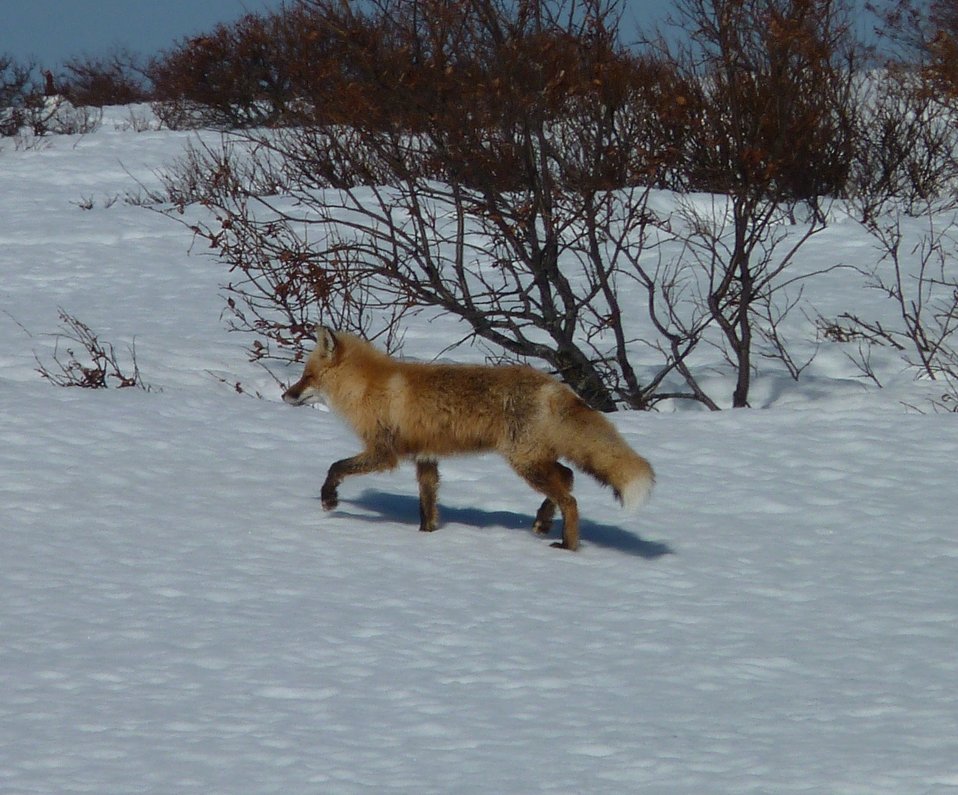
Red fox

Andreafsky Wilderness, Yukon Delta National Wildlife Refuge